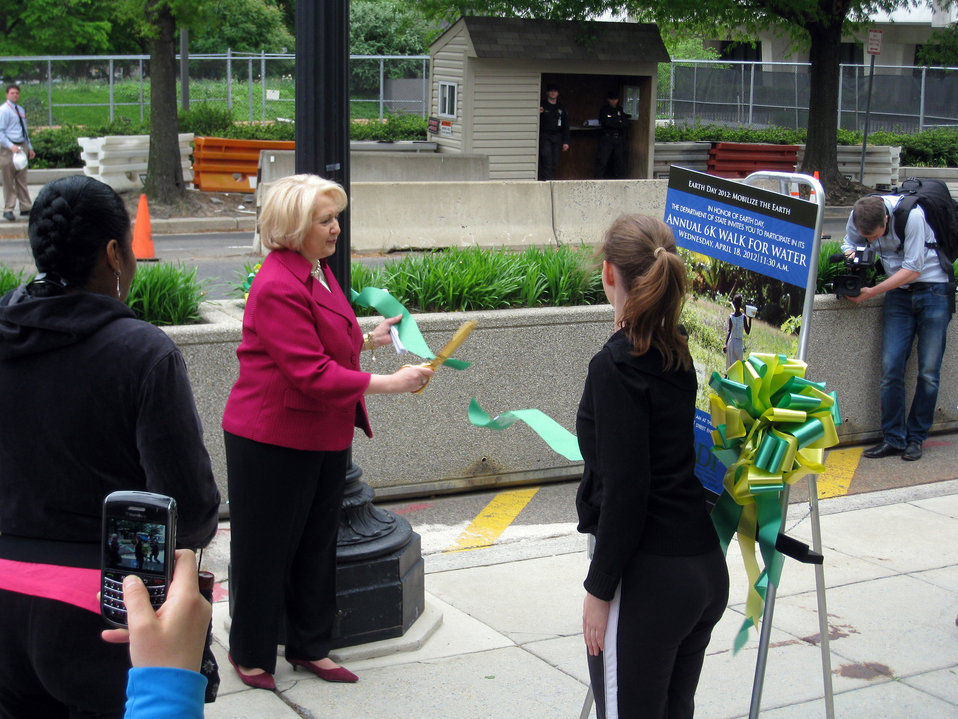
Ambassador Verveer Cuts the Ribbon for the 6k Walk for Water

Ambassador-at-Large for Global Women's Issues Melanne Verveer cuts the ribbon at the second Annual 6k Walk for Water outside of the U.S. Department of State in Washington, D.C., on April 18, 2012. The Annual 6k Walk for Water, part of the Department’s Earth Day celebrations, is organized to acknowledge the millions of people in the developing world, most often women and girls, who walk an average of six kilometers to collect water for their families.